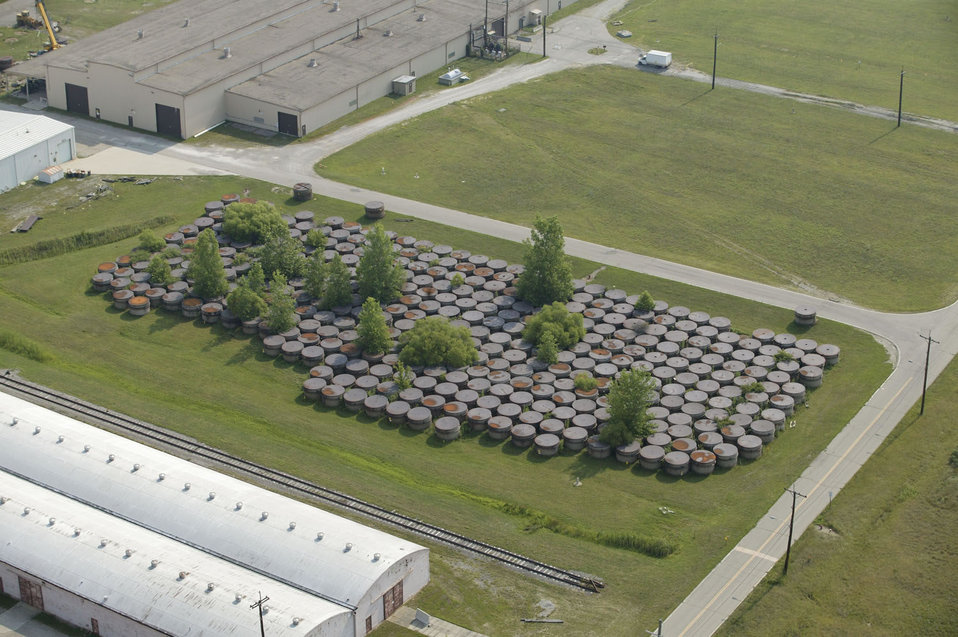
Converter shell storage yard at Portsmouth before removal in 2008.